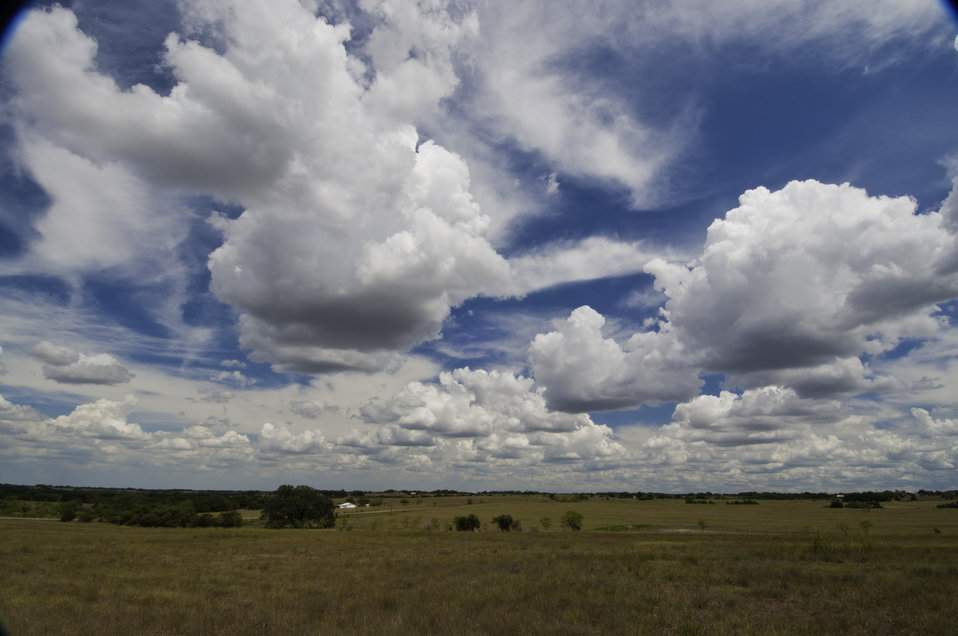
Dry livestock tanks show the effect of drought in Schulenberg, TX on Aug. 23, 2013.